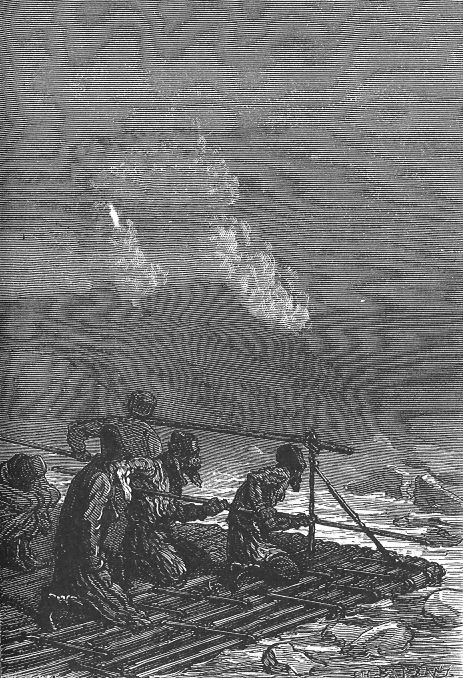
An illustration from the novel 'Michael Strogoff: The Courier of the Czar' by Jules Verne drawn by Jules Férat. Polski: Ilustracja powieści Juliusza Verne'a 'Michał Strogow, kurier carski' autorstwa Julesa Férata. Français : 'Michel Strogoff. Le courier du tzar', Jules Férat. Français : Le vieux marinier, à l’avant près de ses hommes…